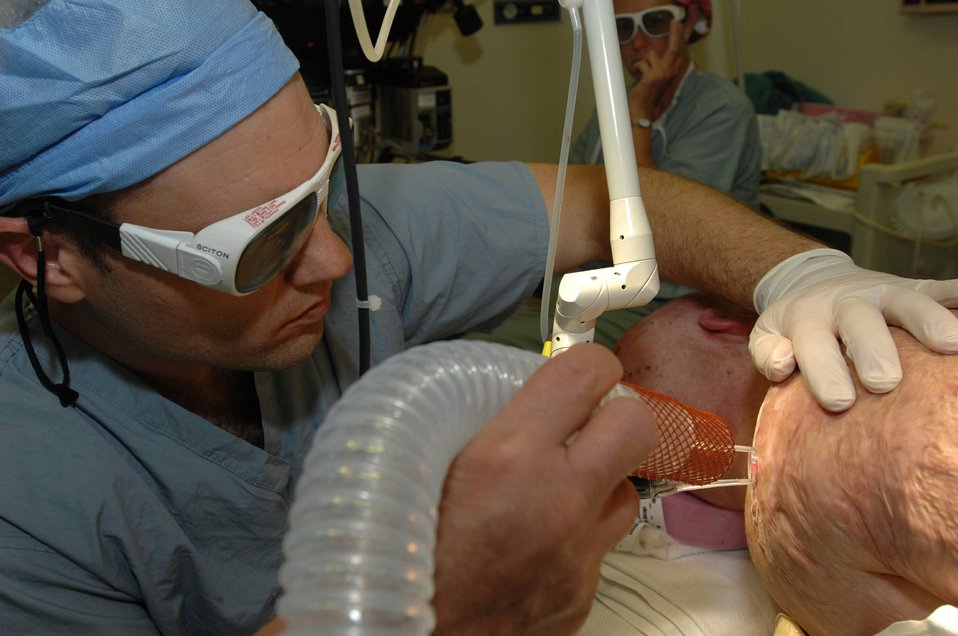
Laser treats wounded warrior scars

Maj. (Dr.) Chad Hivnor treats a wounded warrior's scars May 15 using a state-of-the-art fractional laser. He is the pediatric dermatology chief for the 59th Medical Wing at Wilford Hall Medical Center, Lackland Air Force Base, Texas.